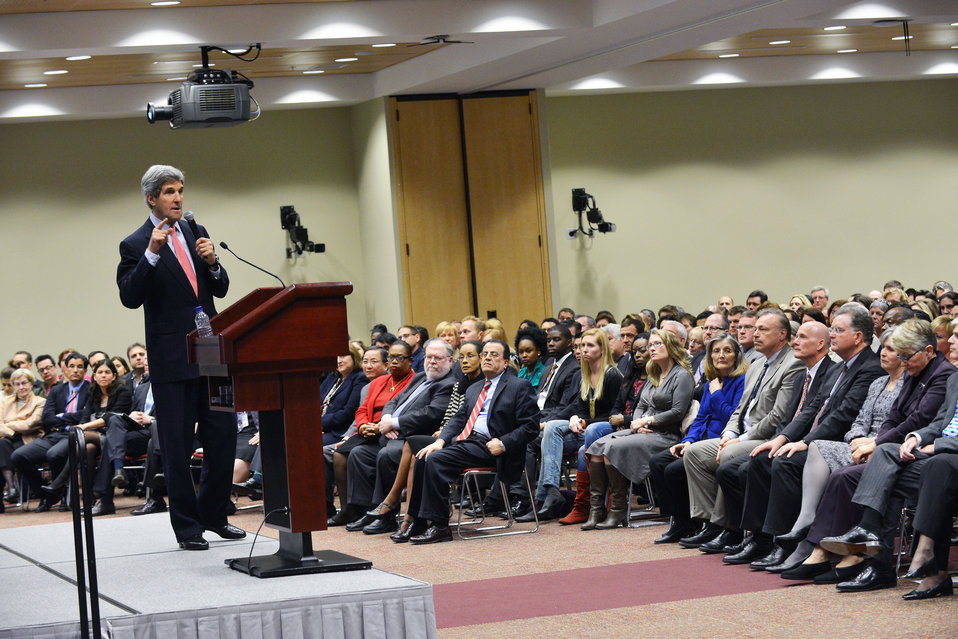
Secretary Kerry Delivers Remarks at the Foreign Service Institute

U.S. Secretary of State John Kerry delivers remarks at the Foreign Service Institute in Arlington, Virginia, on March 15, 2013.